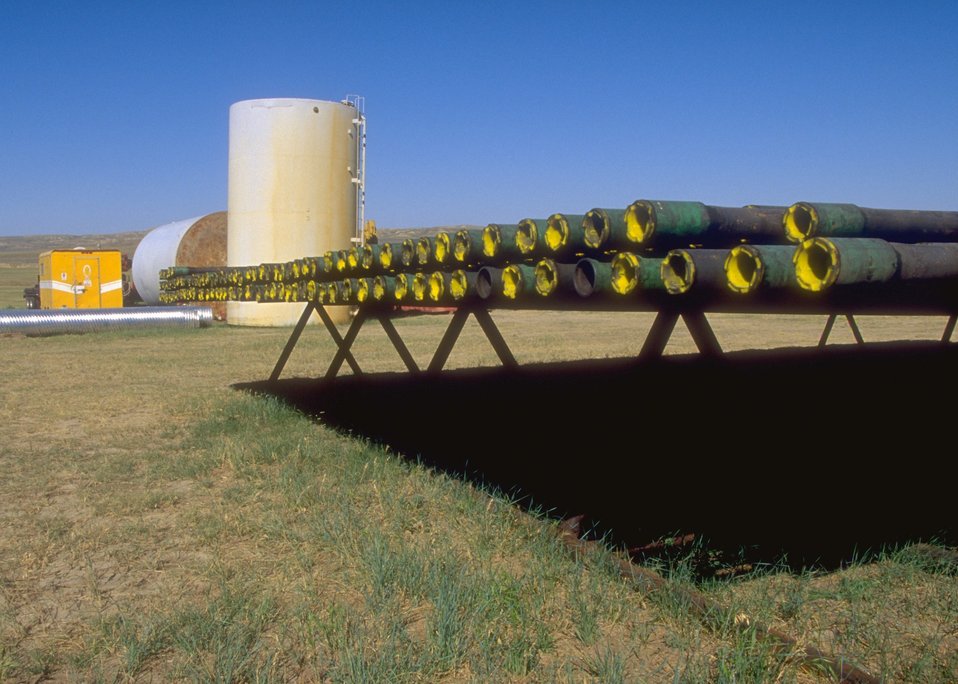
Temporary storage area for coal bed methane development, Buffalo Field Office.